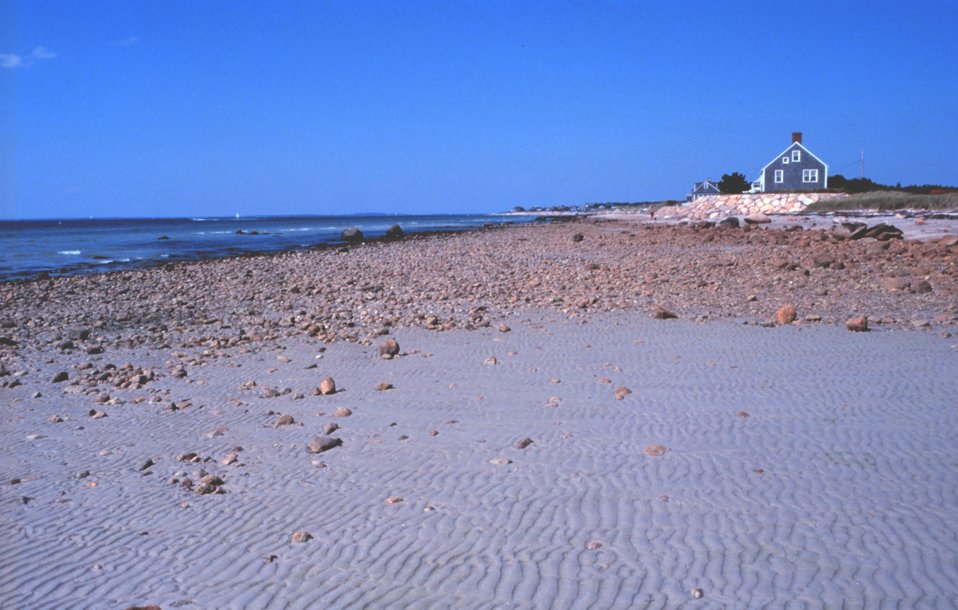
Black Beach, West Falmouth